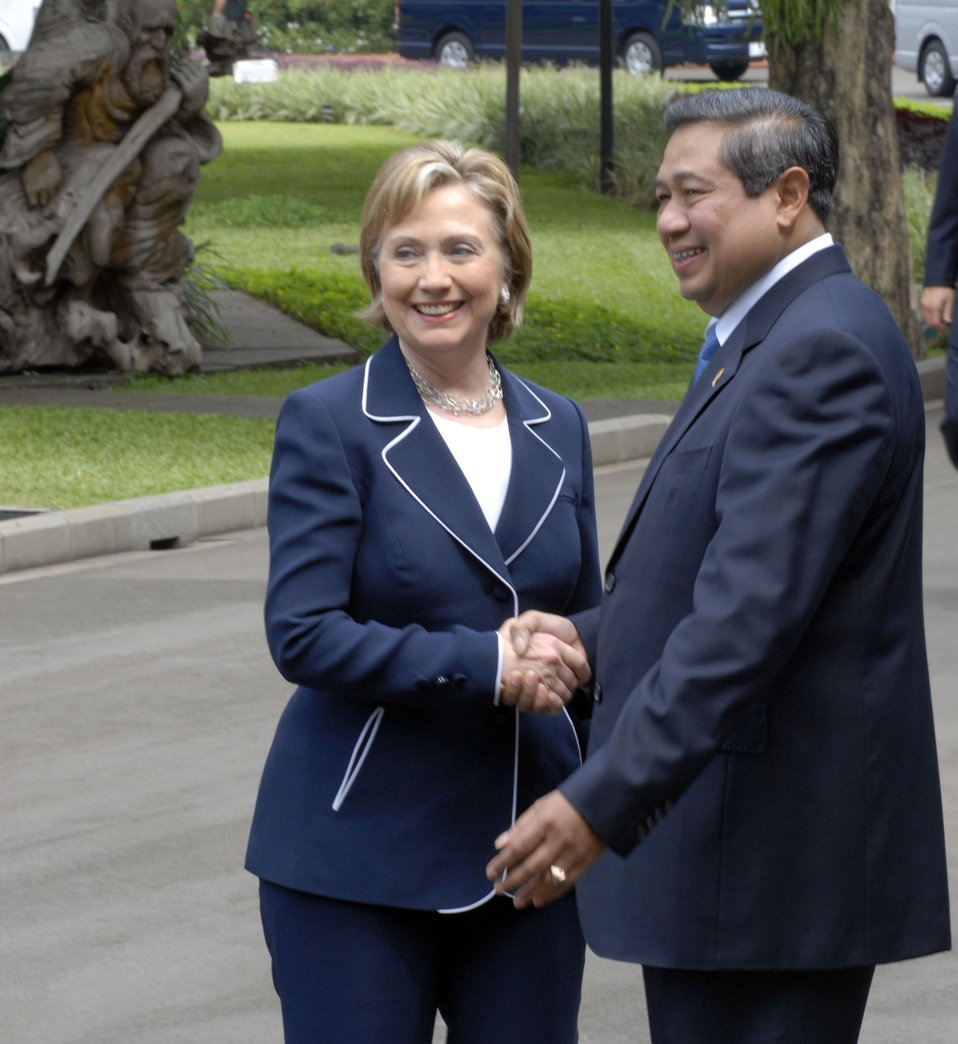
Secretary Clinton at Indonesian Presidential Palace

Secretary Clinton with the President of Republic of Indonesia, Mr. Susilo Bambang Yudhoyono in Jakarta, Indonesia February 19, 2009.